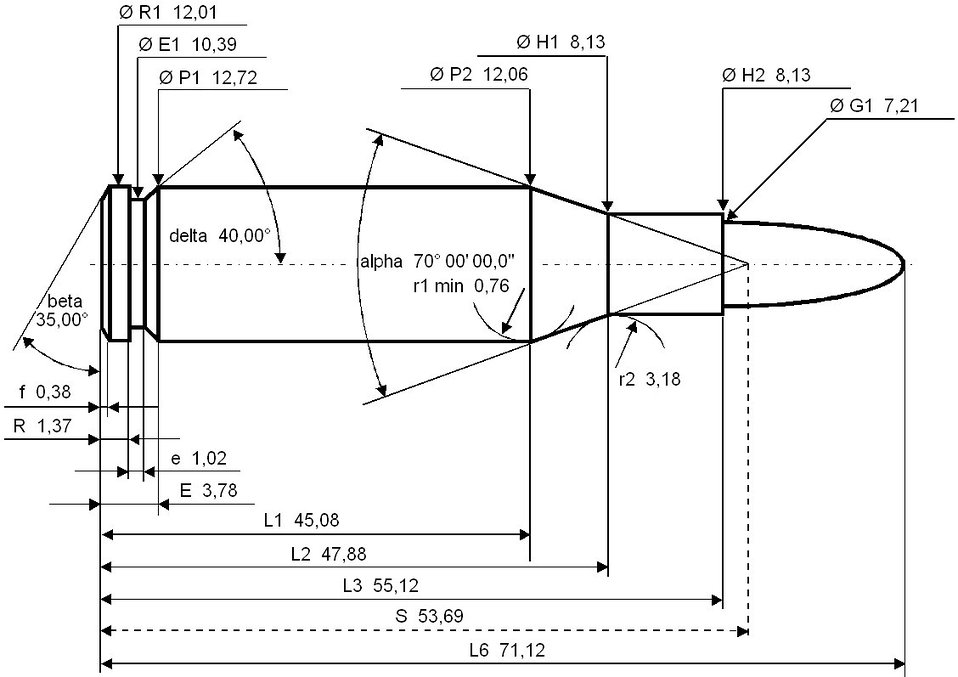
.284 Winchester maximum C.I.P. cartridge dimensions. All sizes in millimeters (mm).